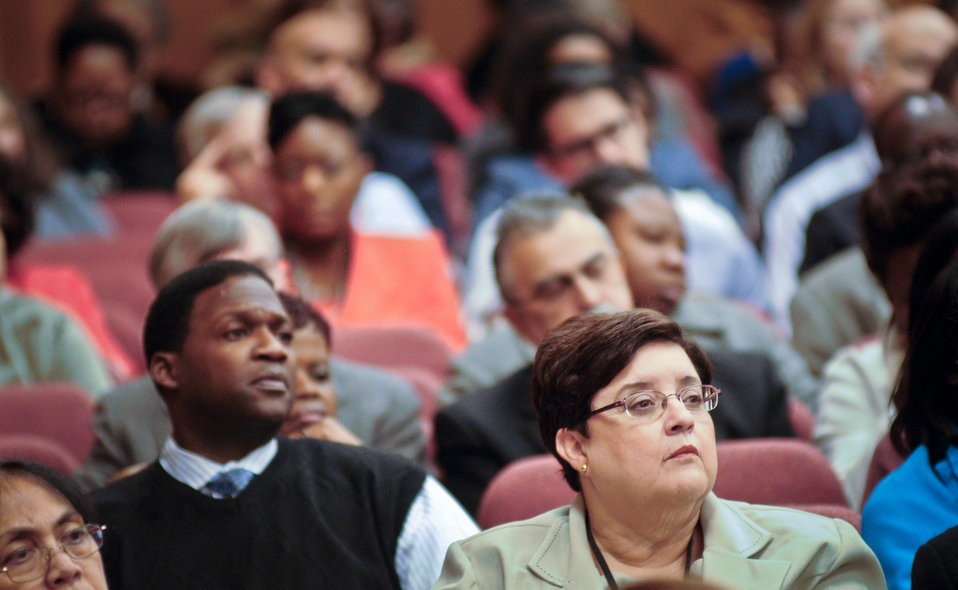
The audience listens to Professor of Law, Columbia University of Law Theodore Shaw speak, during the USDA Dr. Martin Luther King, Jr. National Service Day and Drum Major for Service Awards ceremony at the USDA Jefferson Auditorium, in Washington, D.C., on Tuesday, Jan. 15, 2013.